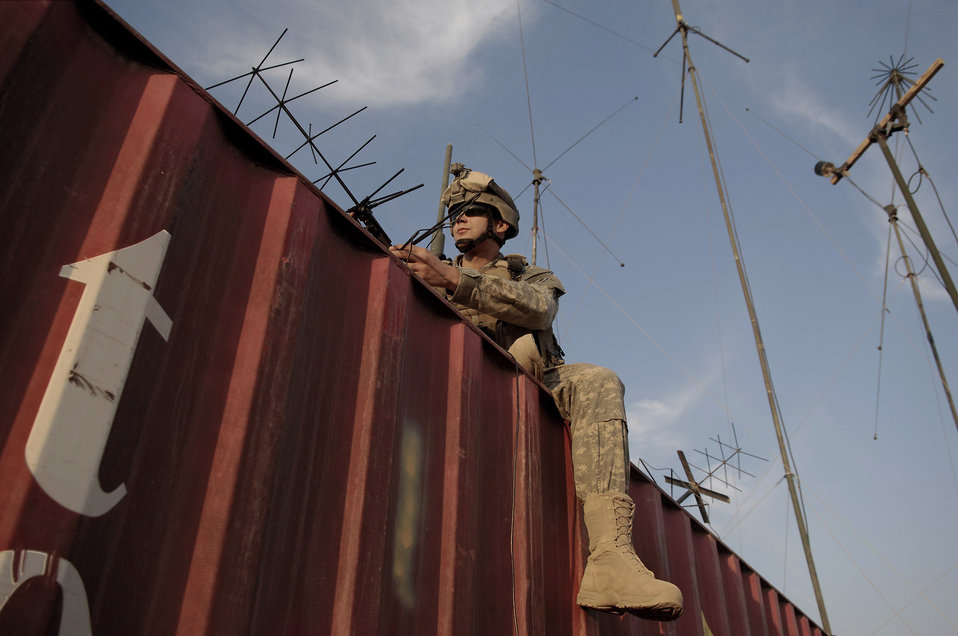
Checking communications

Airman 1st Class Evan Barnhart adjusts an antenna Jan. 21 used to communicate with coalition aircraft providing overwatch for U.S. Army Soldiers who begin missions from Patrol Base Meade, Iraq. Airman Barnhart is a joint terminal attack controller deployed with the 3rd Infantry Division.